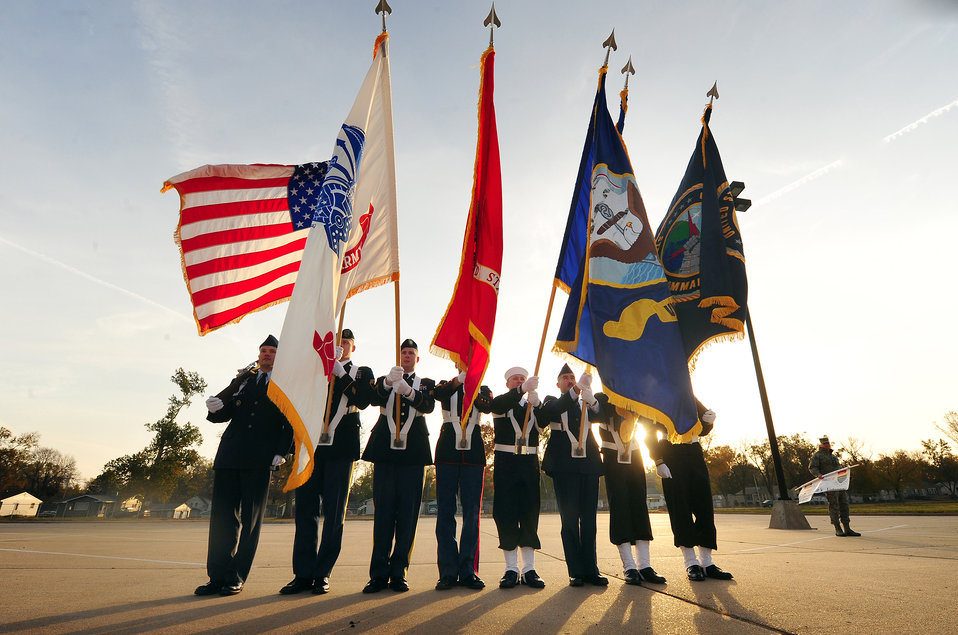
Honoring veterans

The U.S. Strategic Command’s honor guard posts the colors prior to leading Offutt Air Force Base, Neb., members and tenant units in the 2011 Veterans Day parade in Bellevue, Neb., Nov. 5, 2011. Hundreds of military members start the annual parade during which people gather to pay their respects to those who serve in the armed forces.